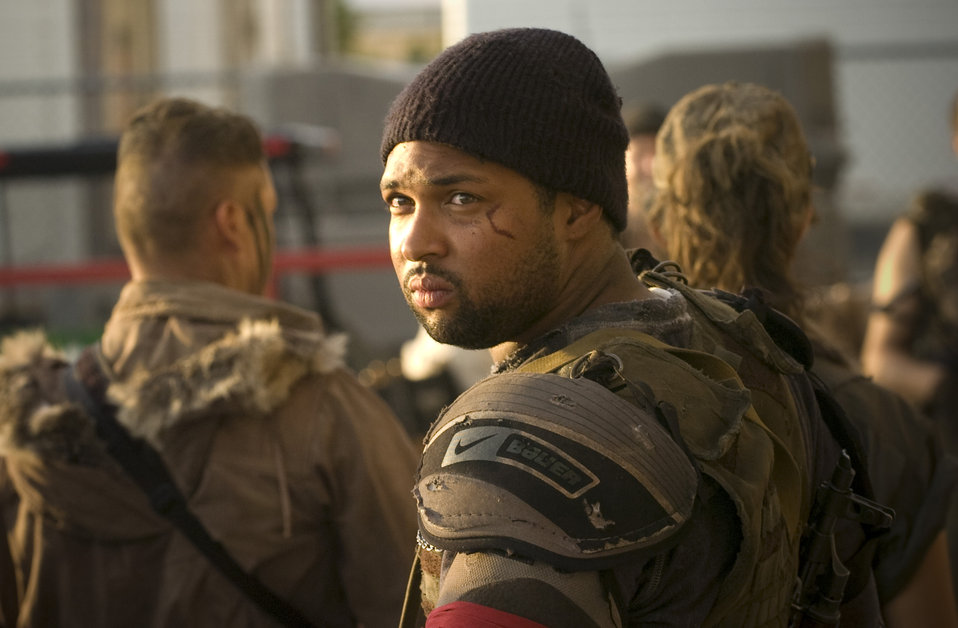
Airmen onboard Terminator Salvation

Tech. Sgt. Alex Francis portrayed a resistance fighter and waited for his cues to walk across the background of the Terminator Salvation movie production at Kirtland Air Force Base, NM on July 18, 2008.